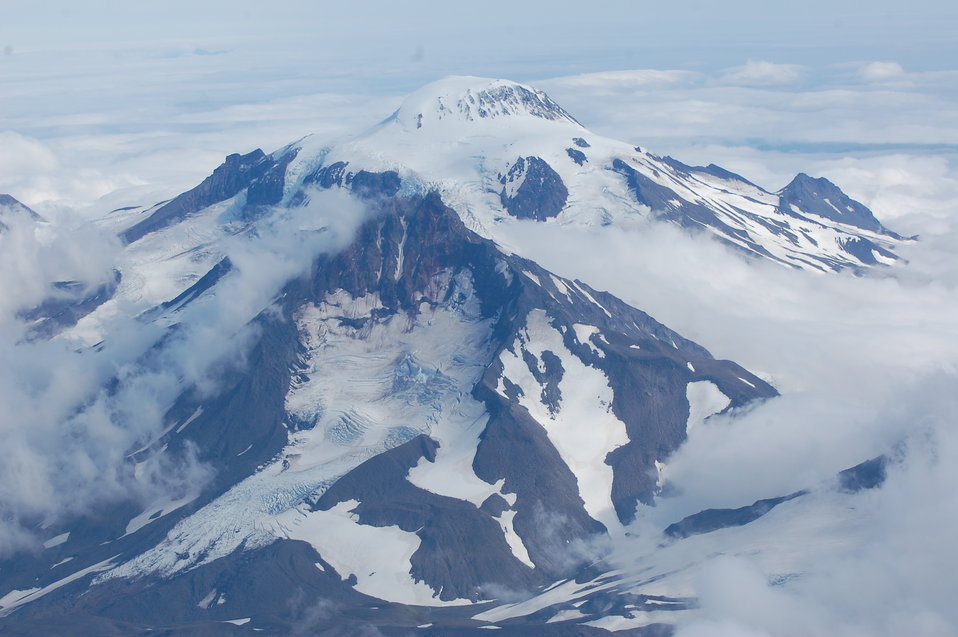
Roundtop Volcano

Unimak Island, Alaska Maritime National Wildlife Refuge